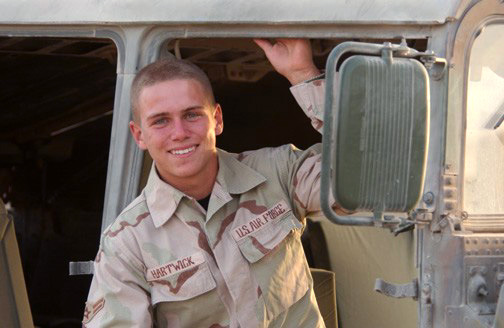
Hartwick

OPERATION IRAQI FREEDOM -- Airman 1st Class Ben Hartwick, a security forces augmentee from the 405th Expeditionary Civil Engineer Squadron, is a first-time participant in the MTV reality series